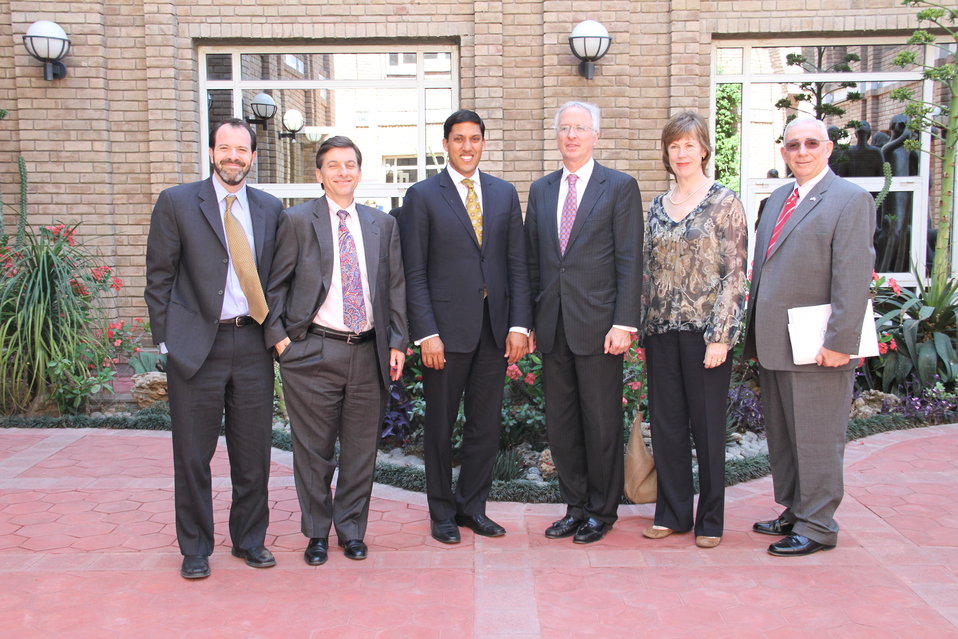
Photo Exhibition Celebrate US-PAK Cooperation at PNCA, Islamabad on April 13, 2012IMG 7765

Mr. Andrew Sisson, Dr. Rajiv Shah, Mr. Cameron Munter, Marilyn Wyatt